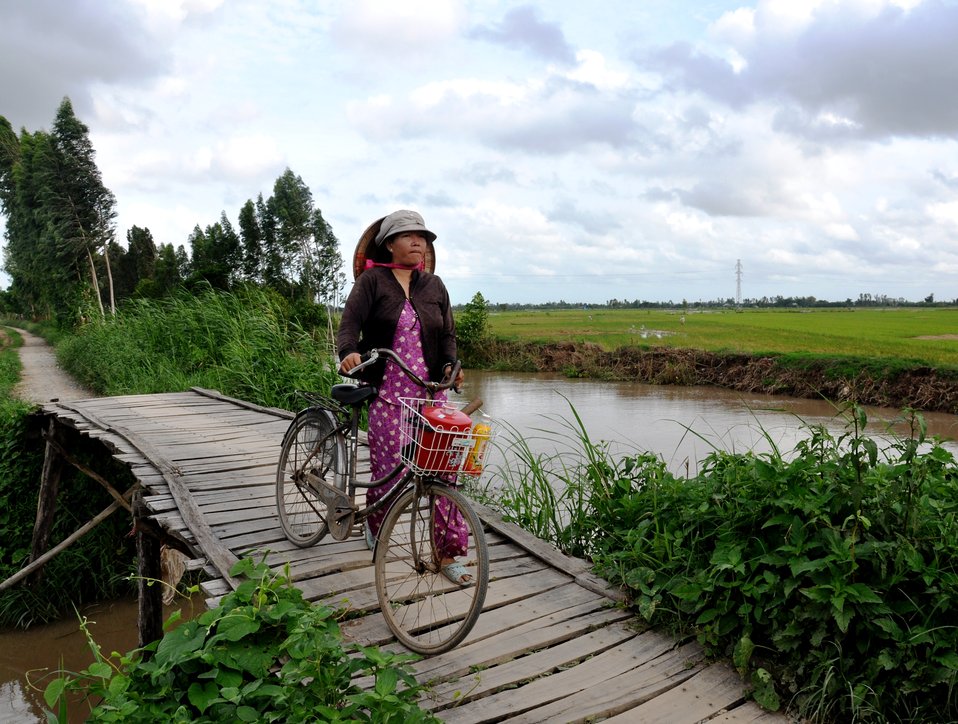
A Vietnamese woman in the Mekong Delta makes her way home

USAID promotes safe poultry farming practices to prevent the spread of avian influenza and other pandemic threats.